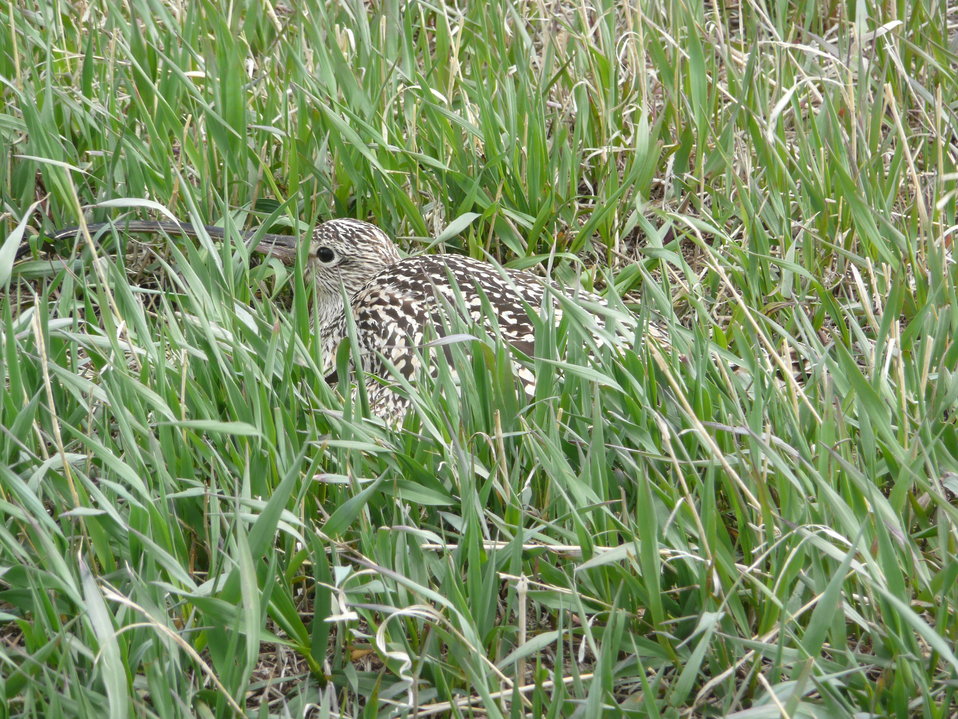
North America's Largest Shorebird

A female Long-Billed Curlew sits on a nest on the National Elk Refuge.

According to the Cornell Lab of Ornithology, the major threat to Long-billed Curlews is habitat loss owing both to development and projected effects of climate change.